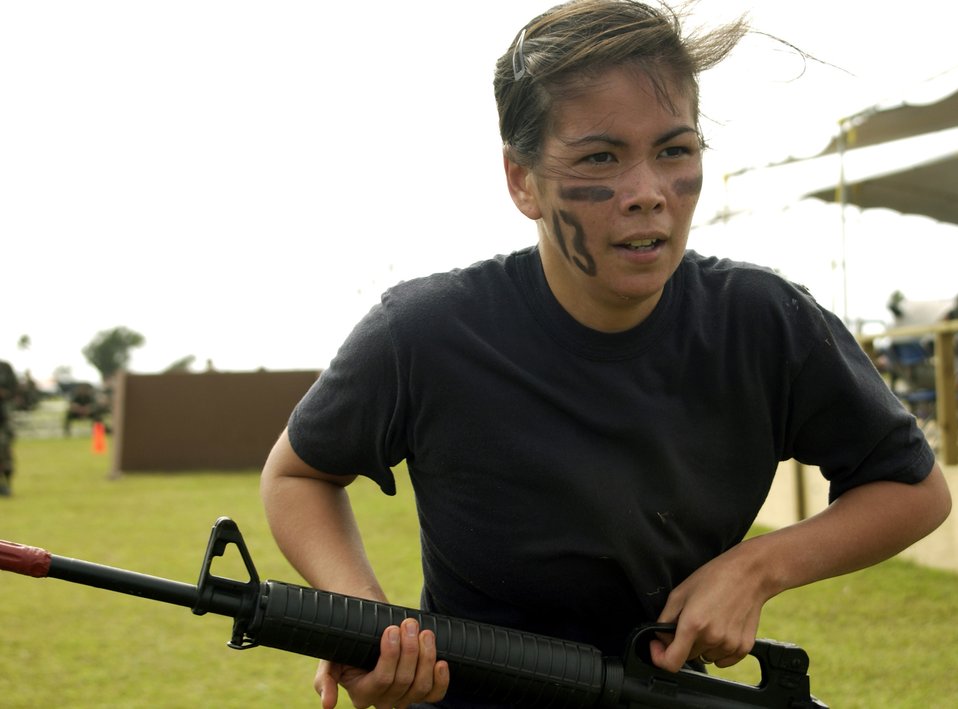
Warrior Day

ANDERSEN AIR FORCE BASE, Guam -- Captain Rebeccah Gervasini carries an M-16 rifle through an obstacle course recently during Andersen's annual Warrior Day Challenge. The event challenges teams from different squadrons in six events testing physical fitness, self-aid buddy care, gas mask donning, weapons assembly, an obstacle course and knowledge of the Airman's Manual. Captain Gervansini is assigned to the 13th Air Force.